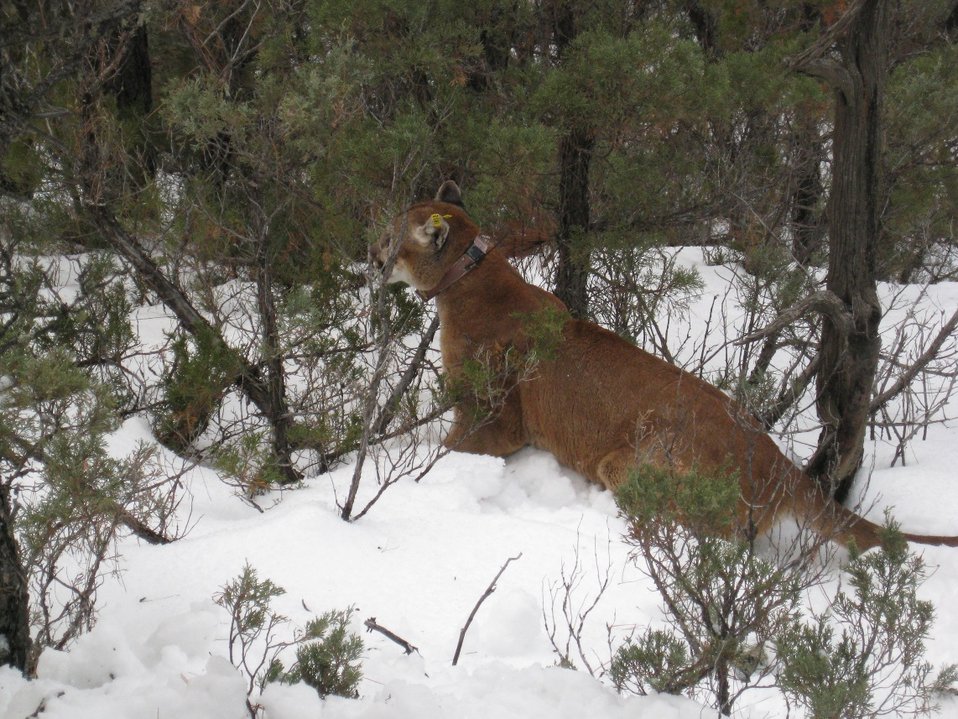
Mountain lion study on Charles M. Russell National Wildlife Refuge. Mountain lion was immobilized and a collar was put on the cat. The cat recovers and soon continues on its way. The collars will record a lion’s location every 5 hours, and drop off in one year. Researchers will then retrieve the collars and use the information to learn more about mountain lion movements and habitat use.